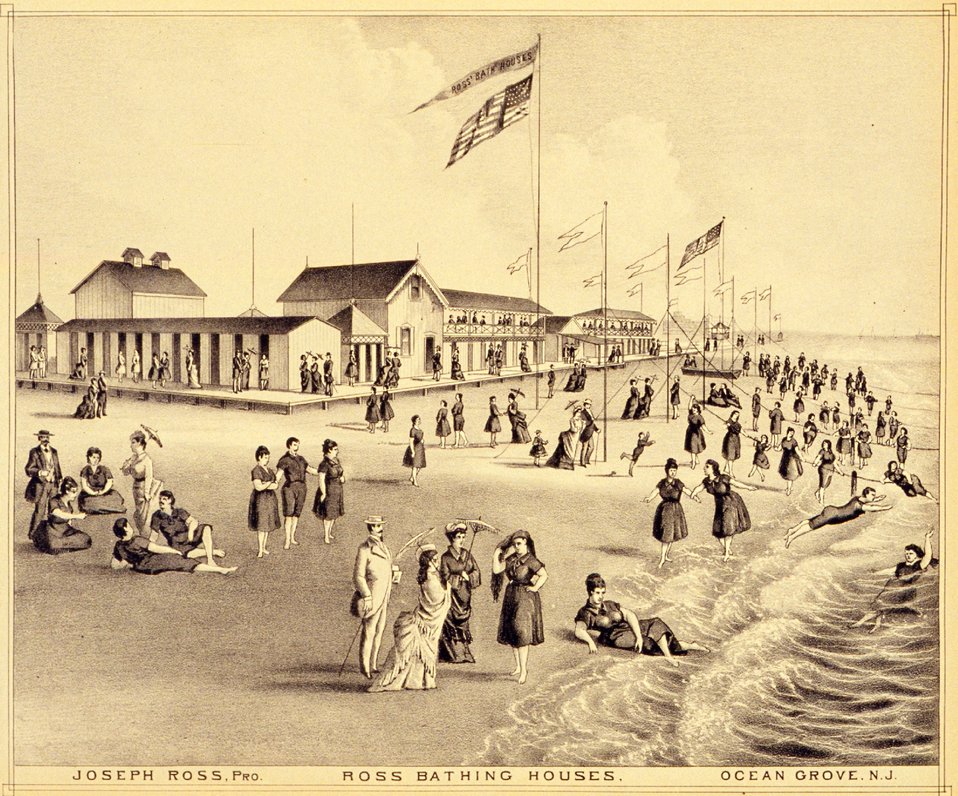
Ross Bathing Houses, Ocean Grove, New Jersey. P. 201. 'Historical and Biographical Atlas of the New Jersey Coast,' by T. F. Rose, 1878.